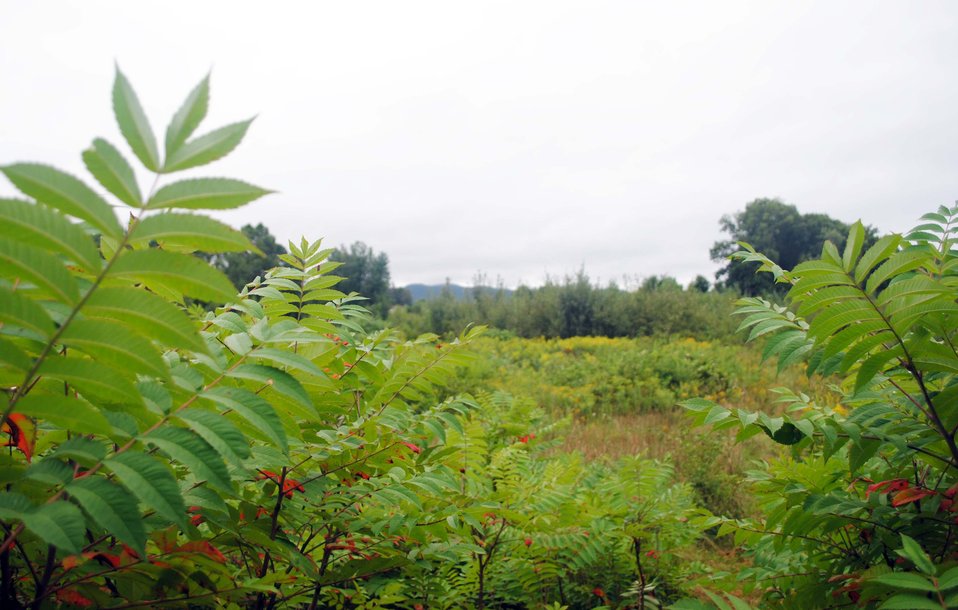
Fort River Division of the Silvio O. Conte National Wildlife Refuge, Hadley, MA.